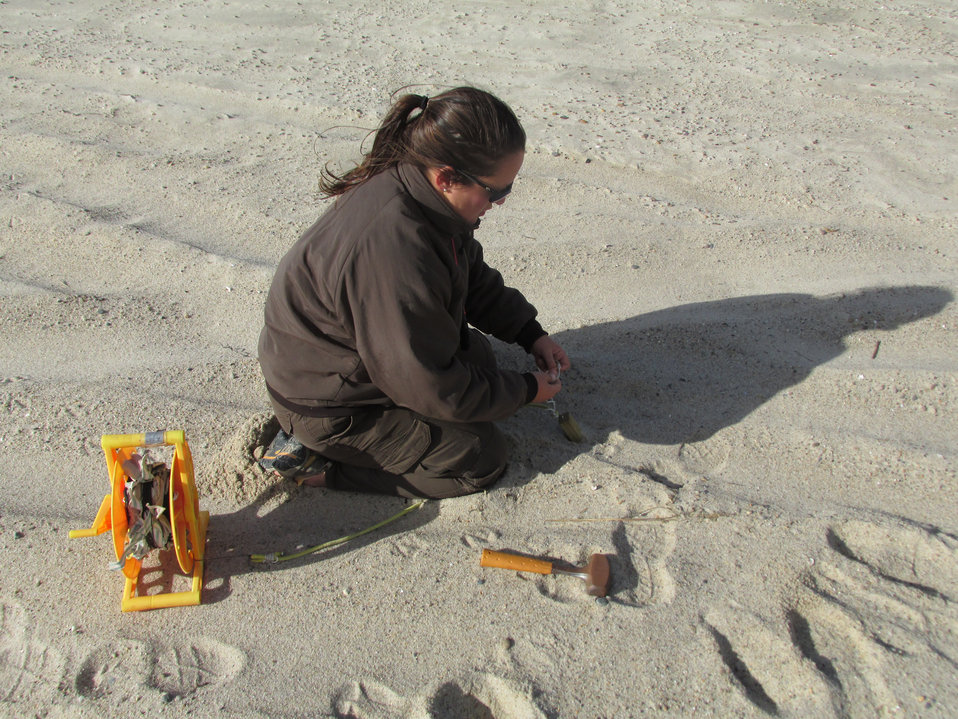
Red knot cannon-netting on Cape Cod

U.S. Fish and Wildlife Service biologist Kate Iaquinto prepares the line for jiggling. When the birds come too close to the front of the net, someone will pull this line to startle the birds away from the danger zone.